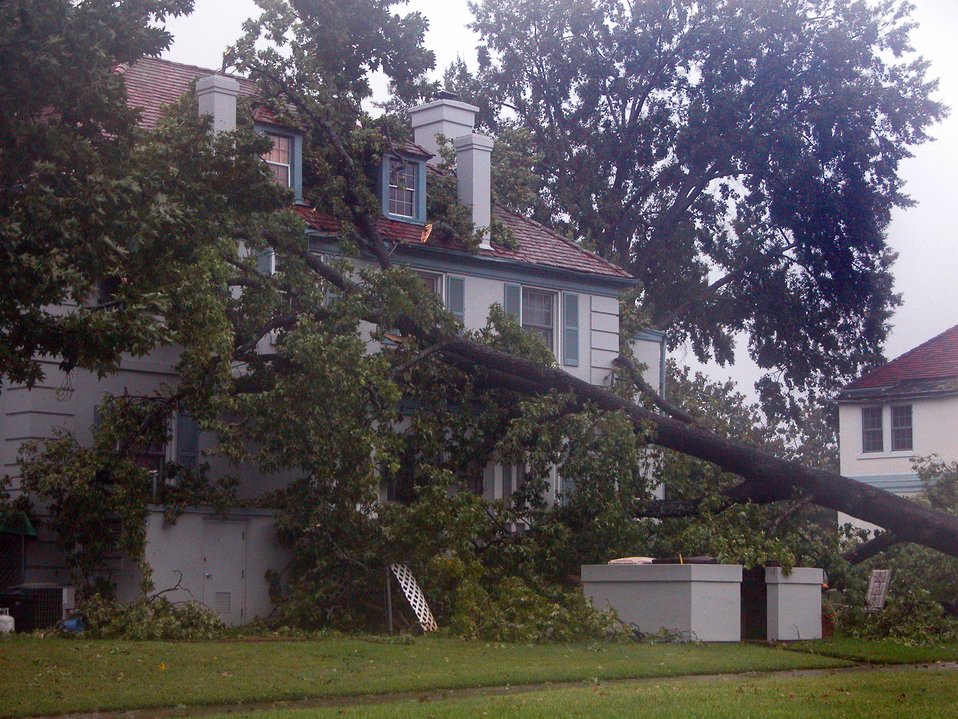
Downed trees damage historic homes

BARKSDALE AIR FORCE BASE, La., -- A historic on-base home was damaged Sept. 24 by a tree downed by Hurricane Rita. .